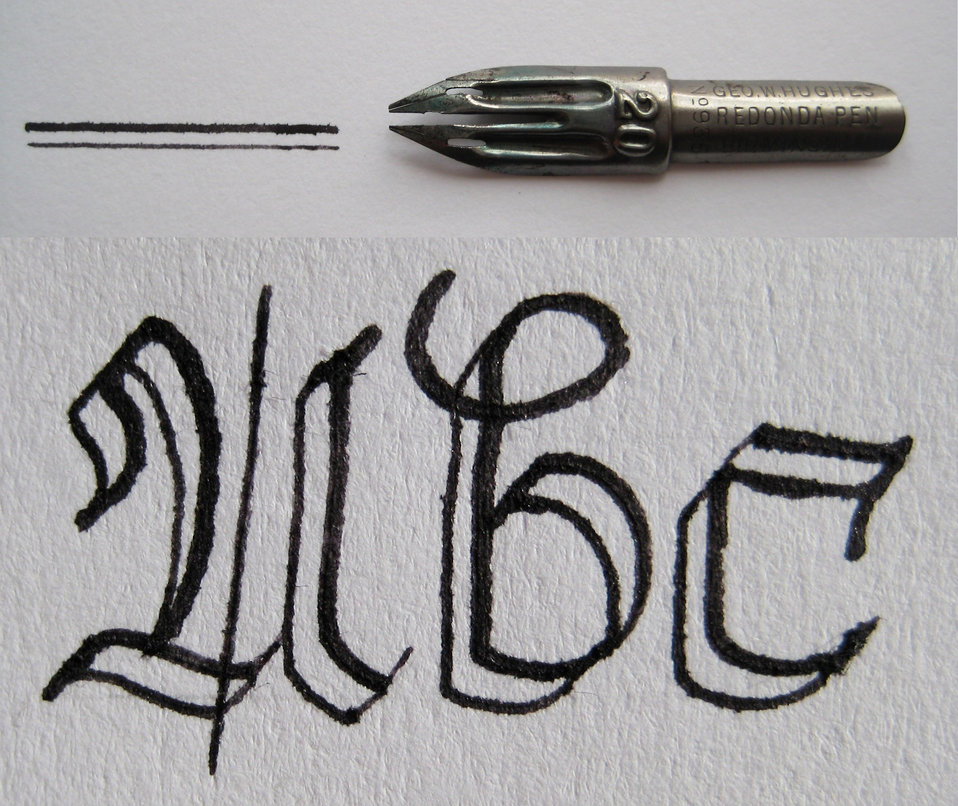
Deutsch: Doppelstrichfeder mit Strich und Schriftbeispiel Scroll nib with a stroke and writing sample